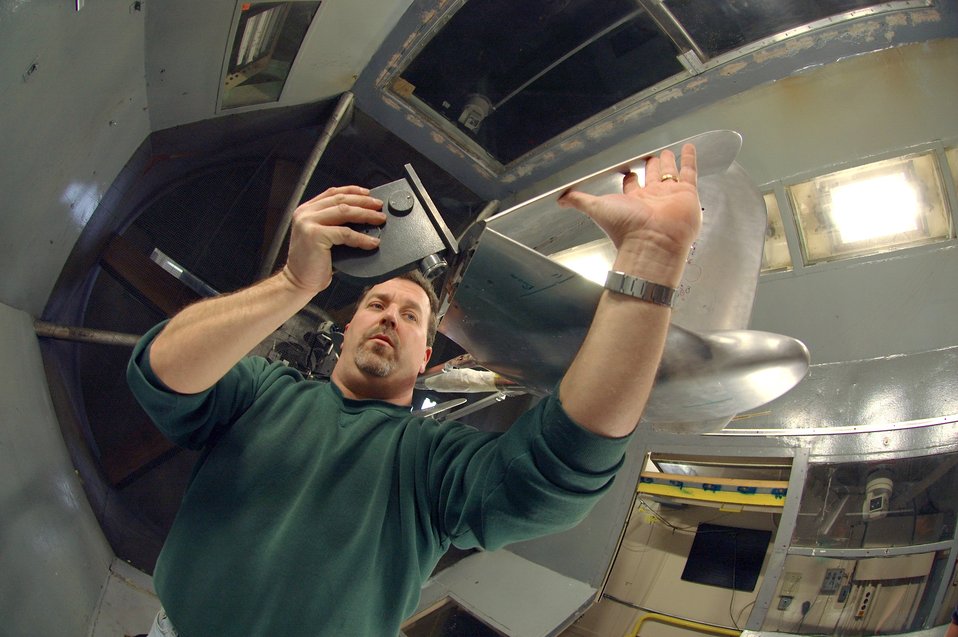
Into space

LANGLEY AIR FORCE BASE, Va. (AFPN) -- Earl Harris adjusts the wing fold of the aerial regional-scale environmental survey of Mars airplane in the NASA 12-foot low-speed tunnel here. The tunnel will test the airplane for stability in various wind conditions and validate its aerodynamics. Mr. Harris is a mechanical engineering technician with the National Aeronautics and Space Administration.